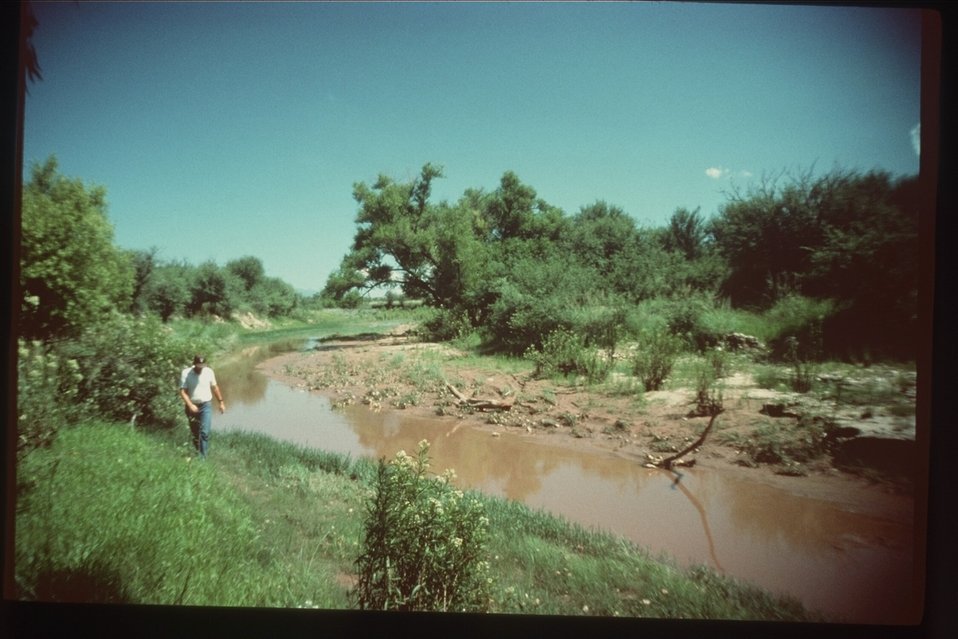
The 45,000-acres of public land in southeastern Pima County and northeastern Santa Cruz County, are home to the Empire and Cienega ranches